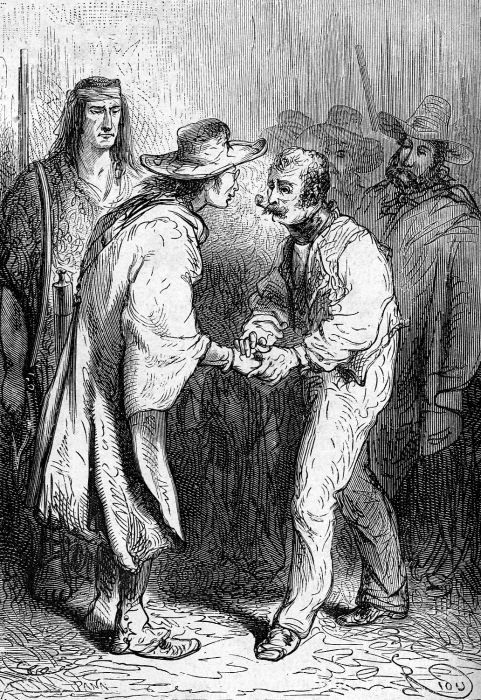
An ilustration from the novel 'In Search of the Castaways; or Captain Grant's Children' by Jules Verne drawn by Édouard Riou. Polski: Ilustracja powieści Juliusza Verne'a 'Dzieci kapitana Granta' autorstwa Édouarda Riou. Français : 'Les Enfants du capitaine Grant', Édouard Riou. Français : « Enchanté ! Bienvenu ! » dit le commandant.